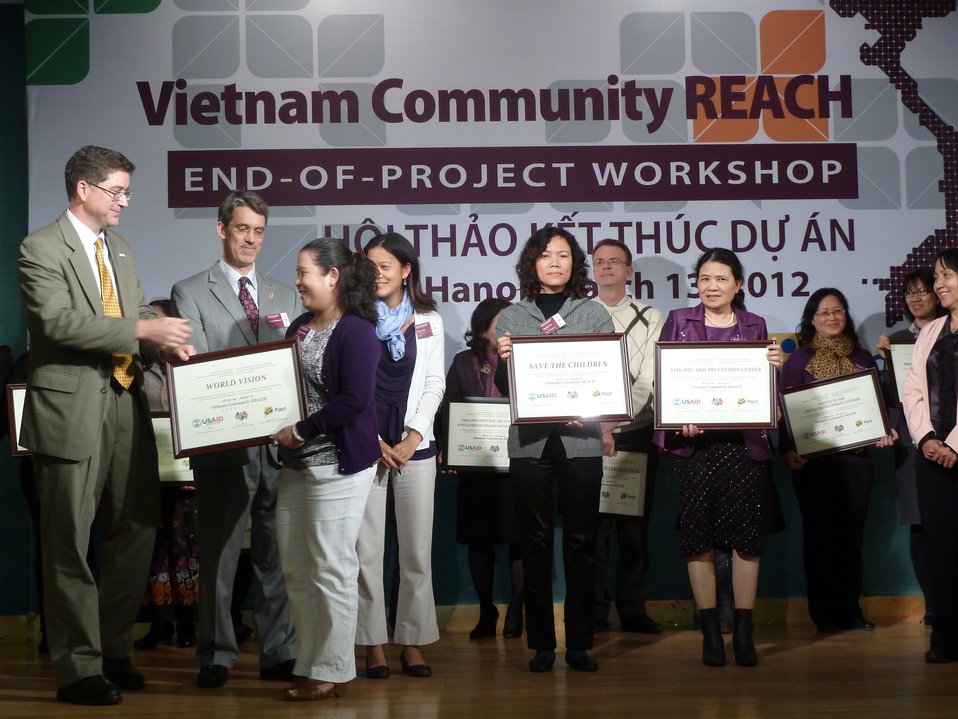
USAID, PEPFAR, and Pact award certificates to local and international partners for their work in addressing HIV in Vietnam

Community REACH project close-out with USAID and implementing partner, Pact